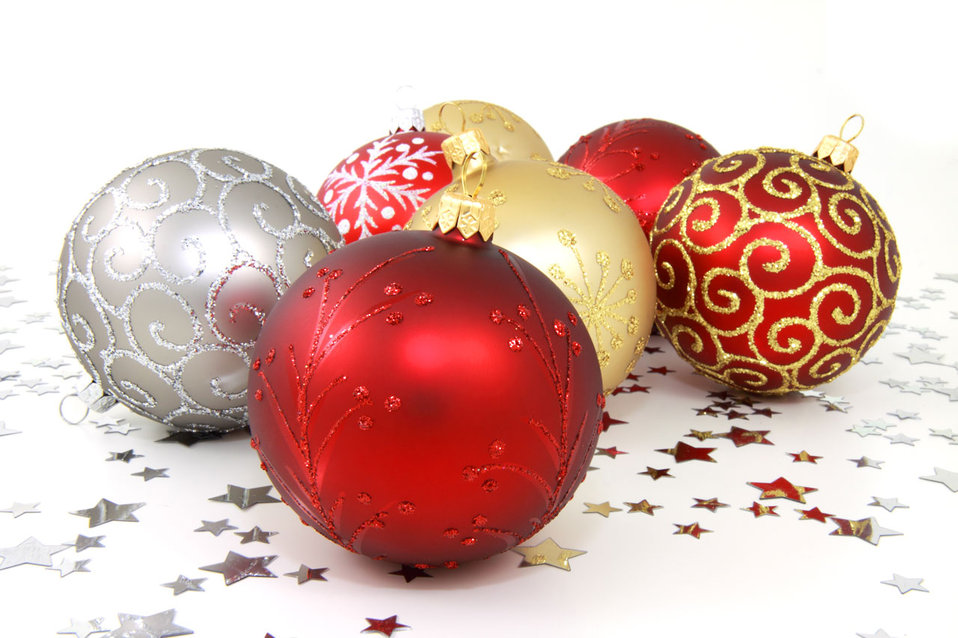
Christmas decoration

Various christmas baubles with silver stars on white background.